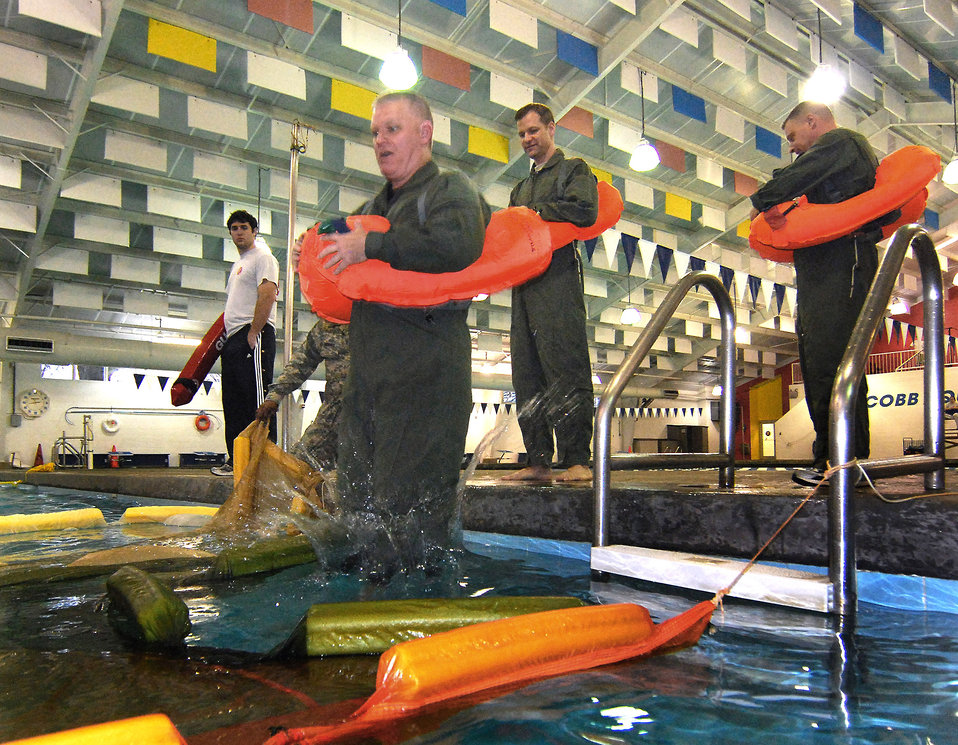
Water survival training

Aircrew members from the 94th Airlift Wing wear life preservers as part of water survival training Feb. 4, 2011, at the Cobb Aquatic Center in Marietta, Ga.